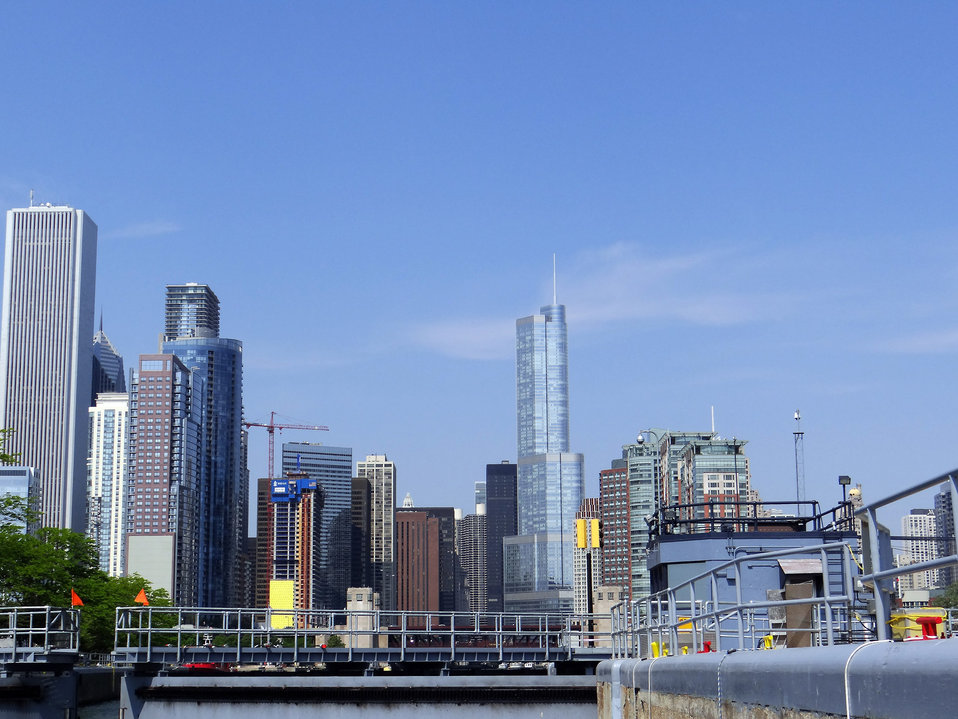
Downtown chi-town

Heading towards the city entering through the lock towards lake shore drive.